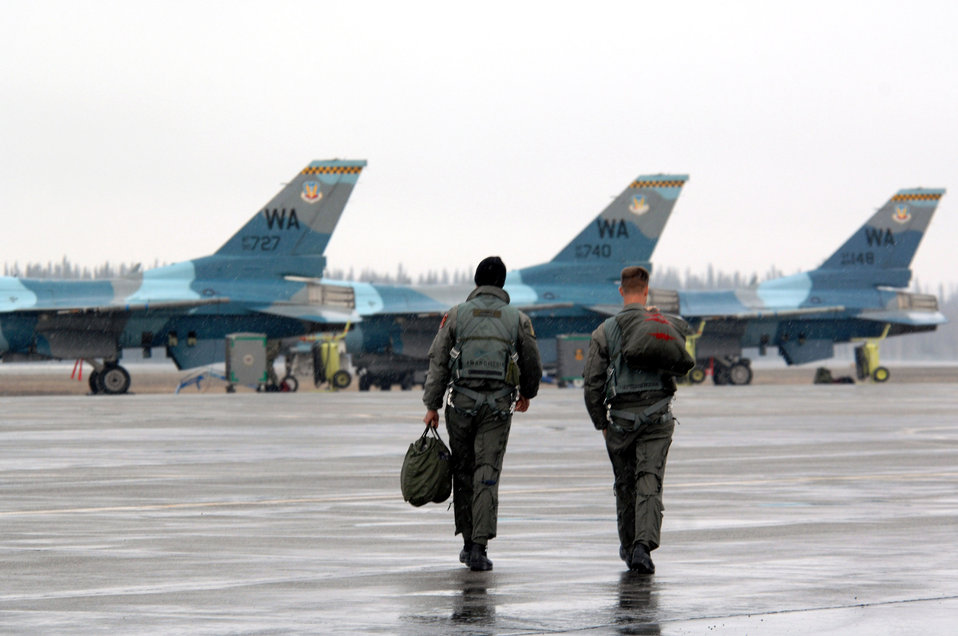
Air combat ready at Red Flag-Alaska

Two F-16 Fighting Falcon pilots step to their jets prior to a mission April 12 during Red Flag-Alaska 07-1 at Eielson AFB, Alaska. Red Flag-Alaska is a Pacific Air Forces-directed field training exercise for U.S. forces flown under simulated air combat conditions. It is conducted on the Pacific Alaskan Range Complex with air operations flown out of Eielson and Elmendorf Air Force Bases. The pilots are from the 64th Aggressor Squadron at Nellis Air Force Base, Nev.